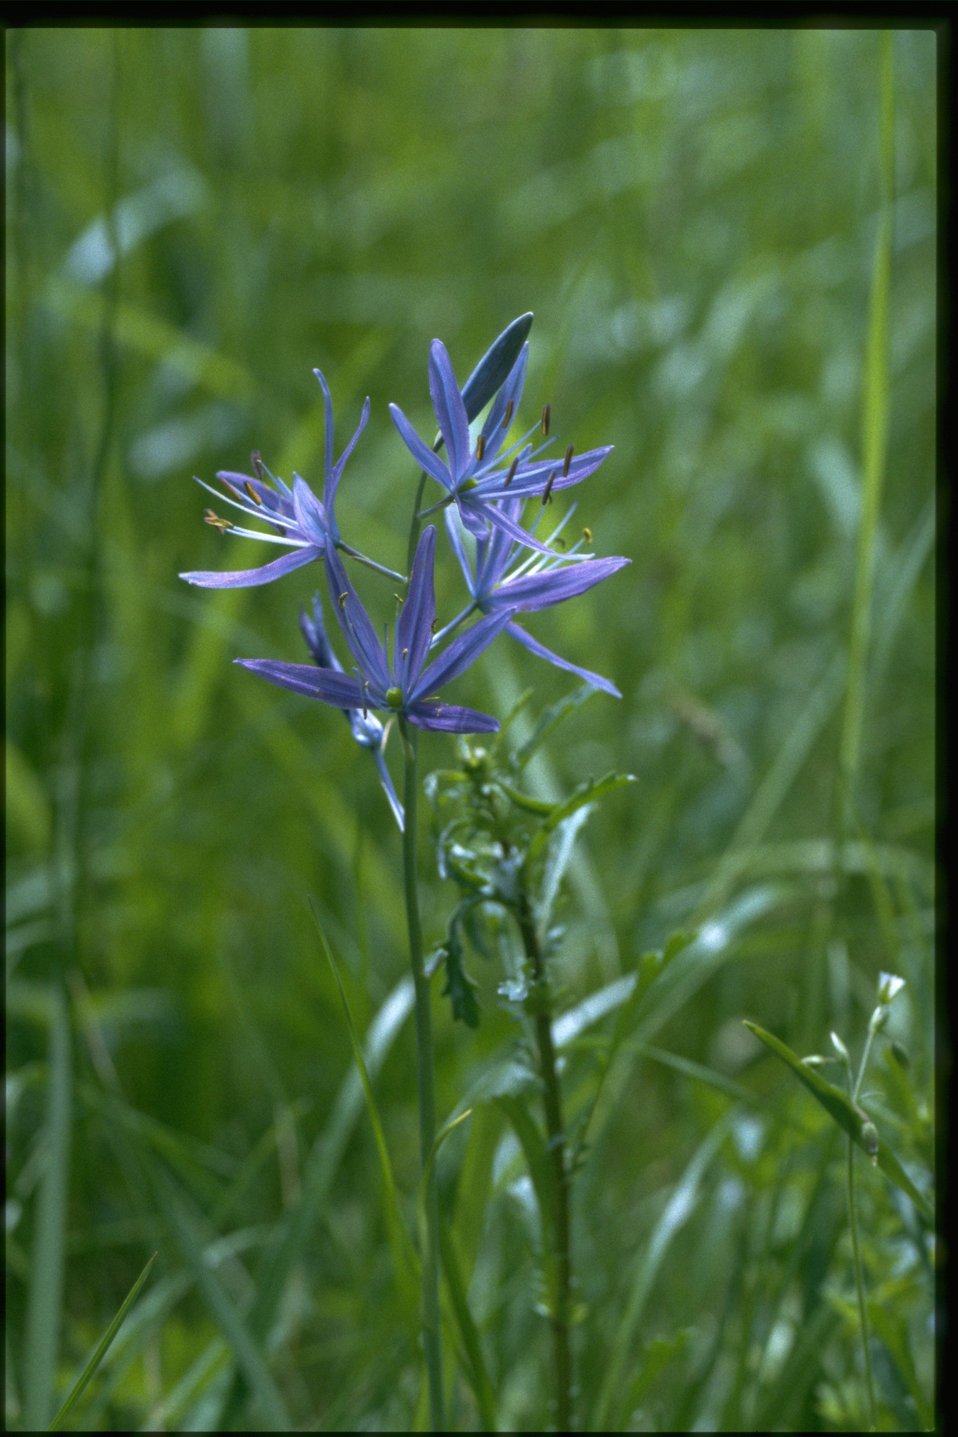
Medium shot of Camassia quamash.